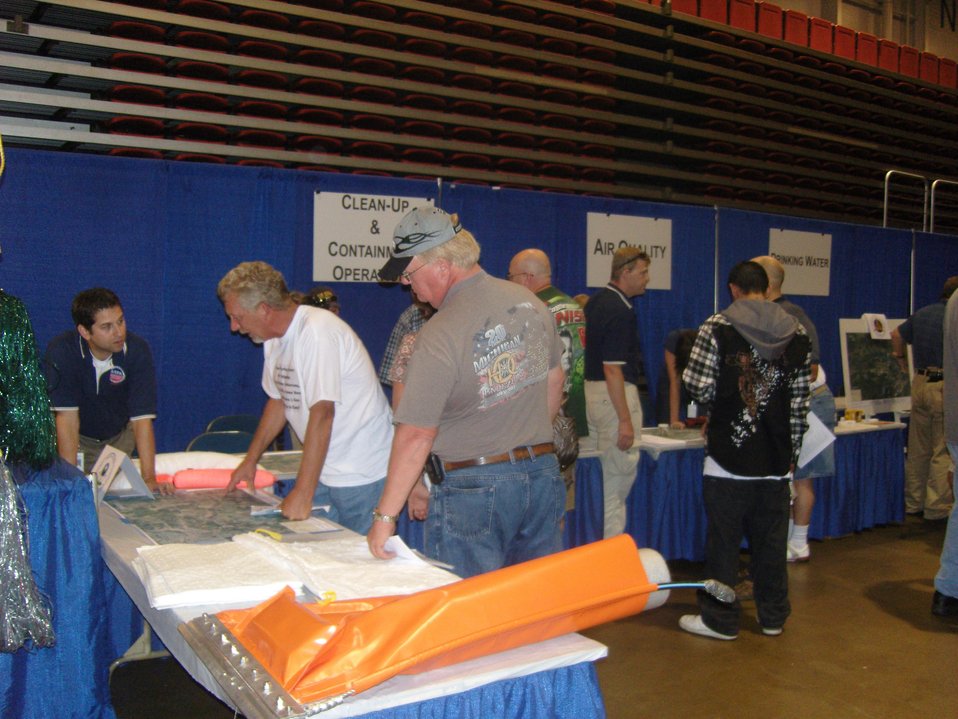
Battle Creek Community Meeting Expo

August 10, 2010 - EPA On-Scene Coordinators explain response and technical details to community members regarding the Enbridge Oil Spill at a Community Meeting in Battle Creek, Michigan